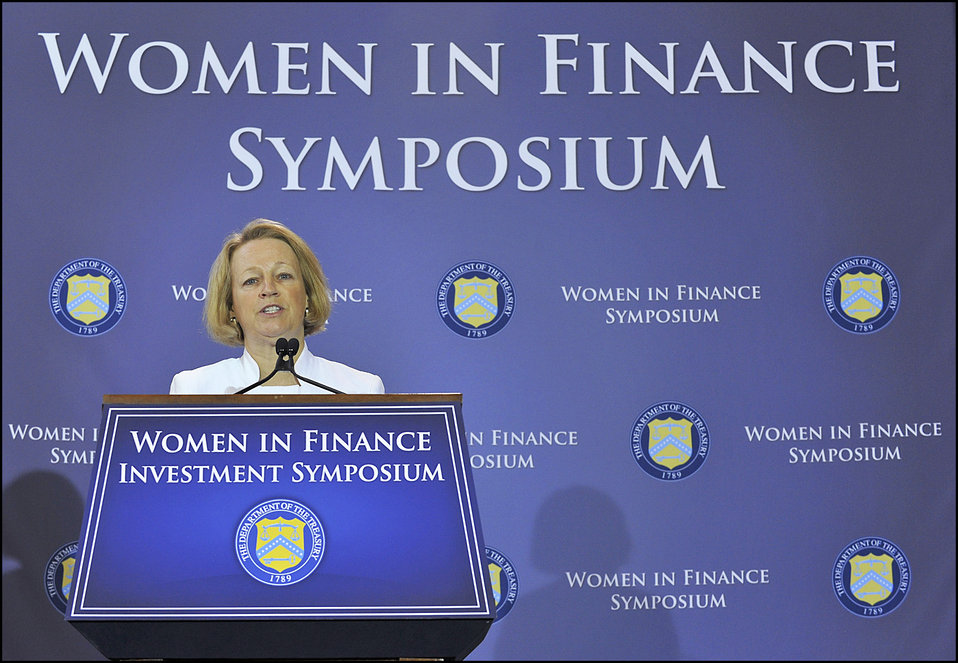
Women in Finance Investment Symposium

Chairman of the SEC provided closing remarks at the end of the symposium.